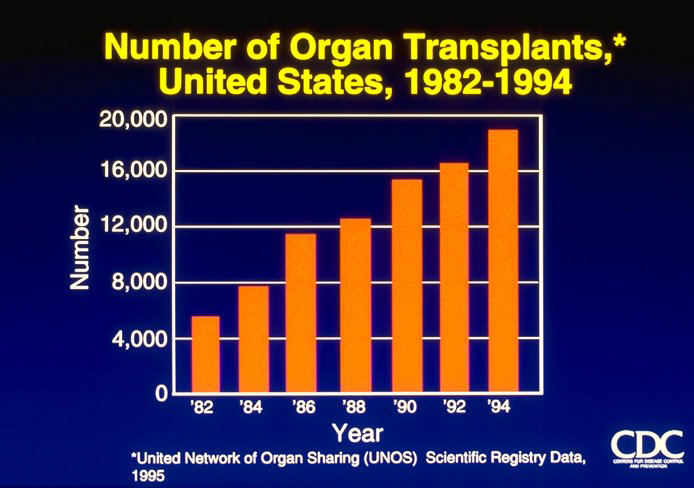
Number of Organ Transplants, United States, 1982-1994 (graph)